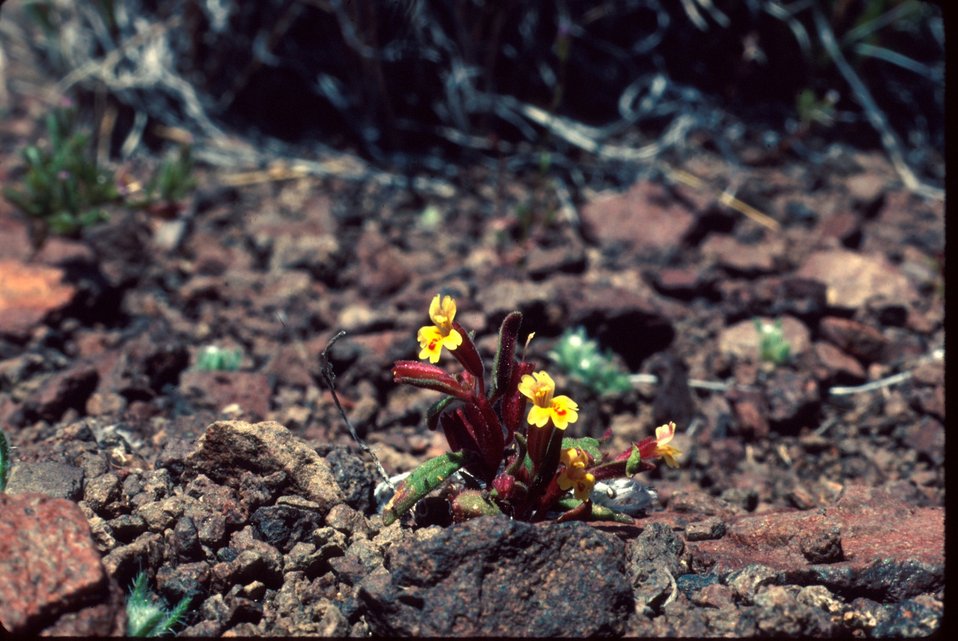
Mimulus suksdorfi monkey flower